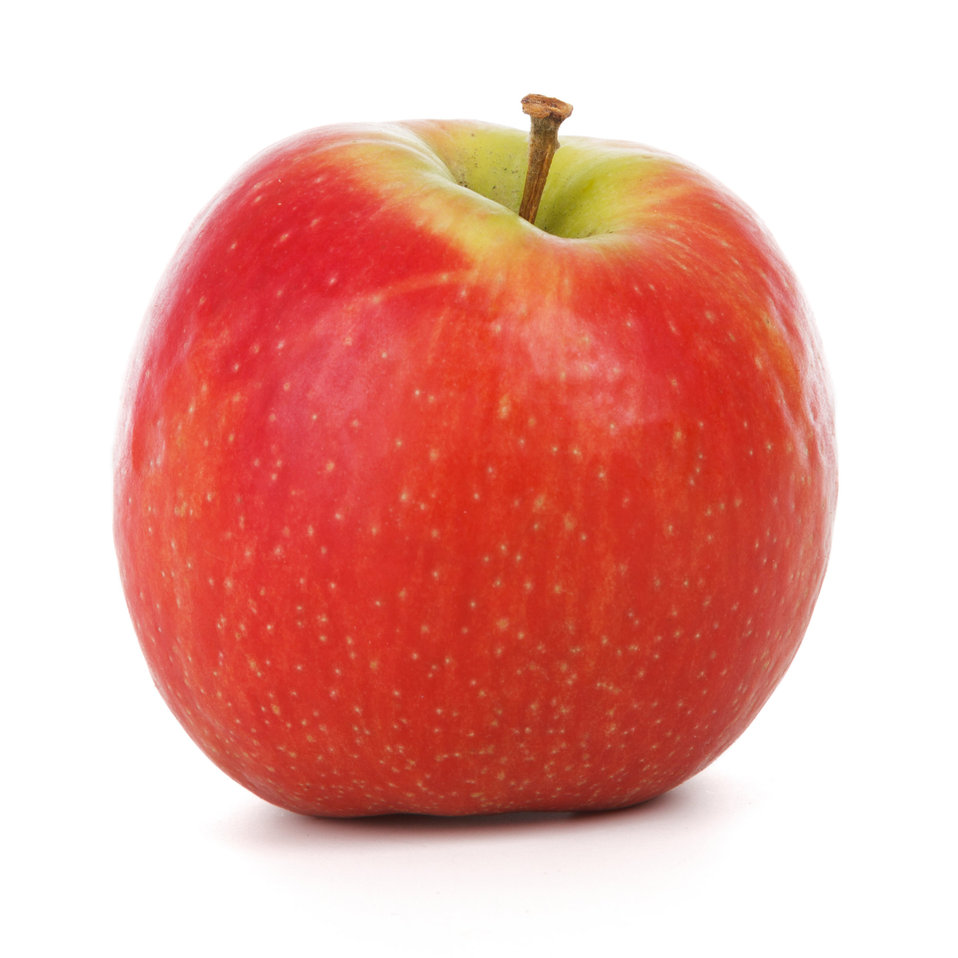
Red apple isolated

A single red apple isolated on white background.